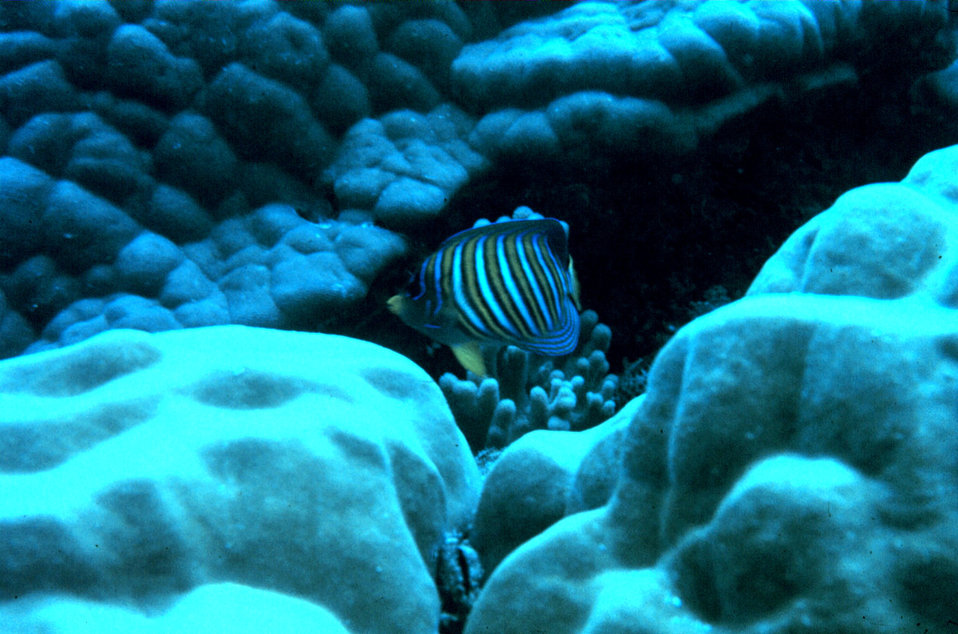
Angelfish